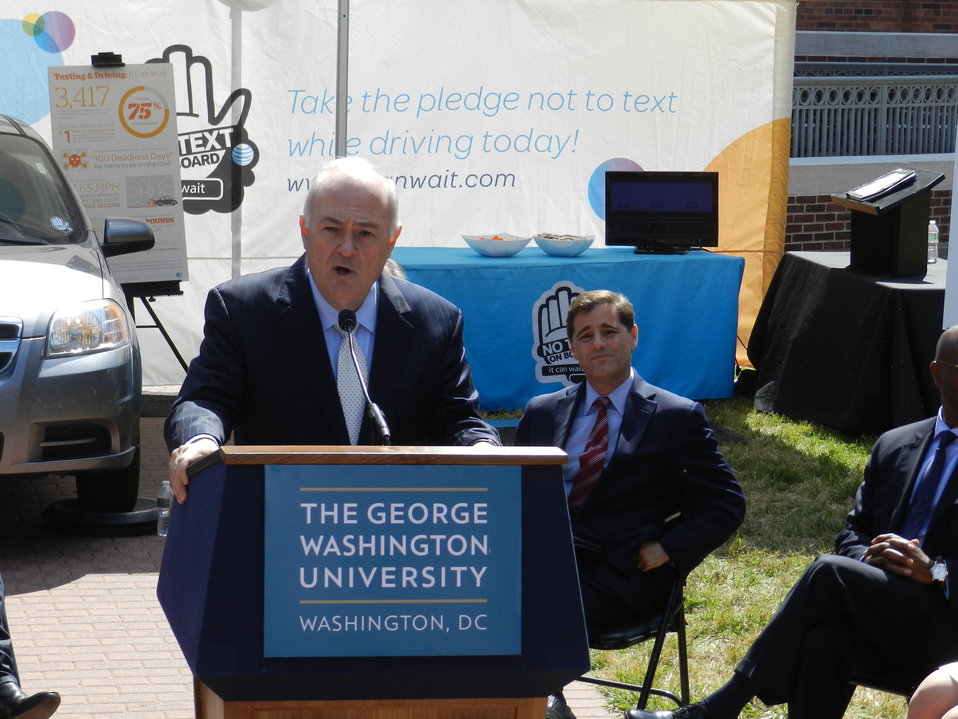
It Can Wait Pledge Day 9.19.12

Steven Knapp, President, George Washington University speaking at the ‘No Text On Board’ Pledge Day Event, The George Washington University, Washington, D.C. September 19, 2012